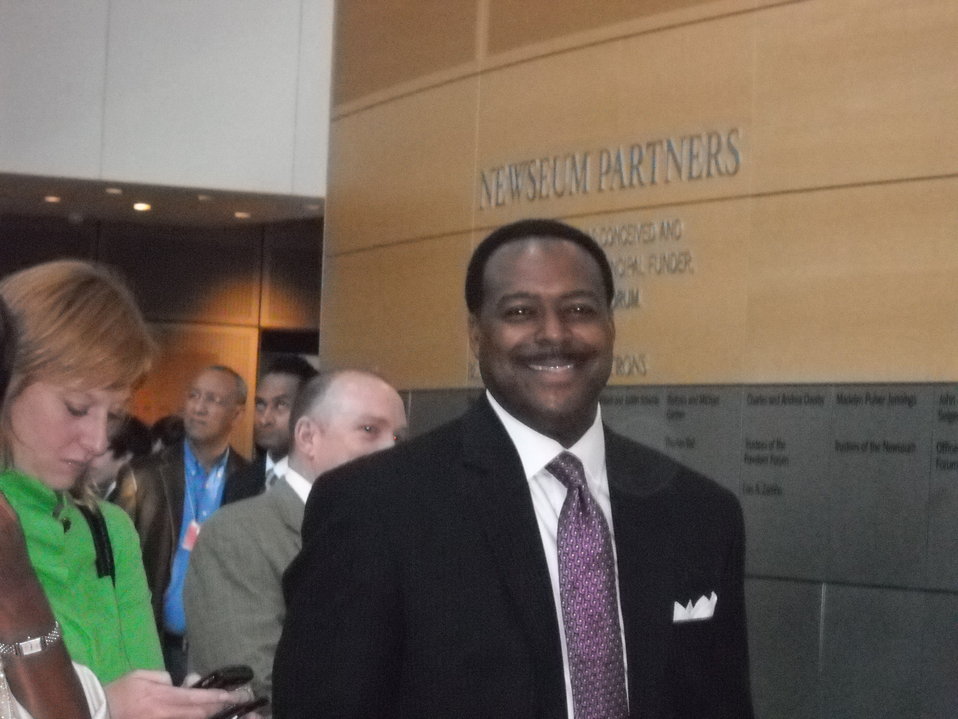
National No Phone Zone Day Newsum Washington, DC April 30, 2010 017